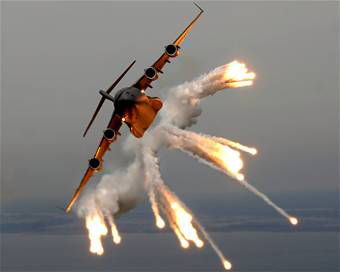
C-17s over Charleston

A C-17 Globemaster III from the 14th Airlift Squadron, Charleston Air Force Base, S.C., releases flares over the Atlantic Ocean near Charleston, S.C., during a training mission on Tuesday, May 16, 2006.